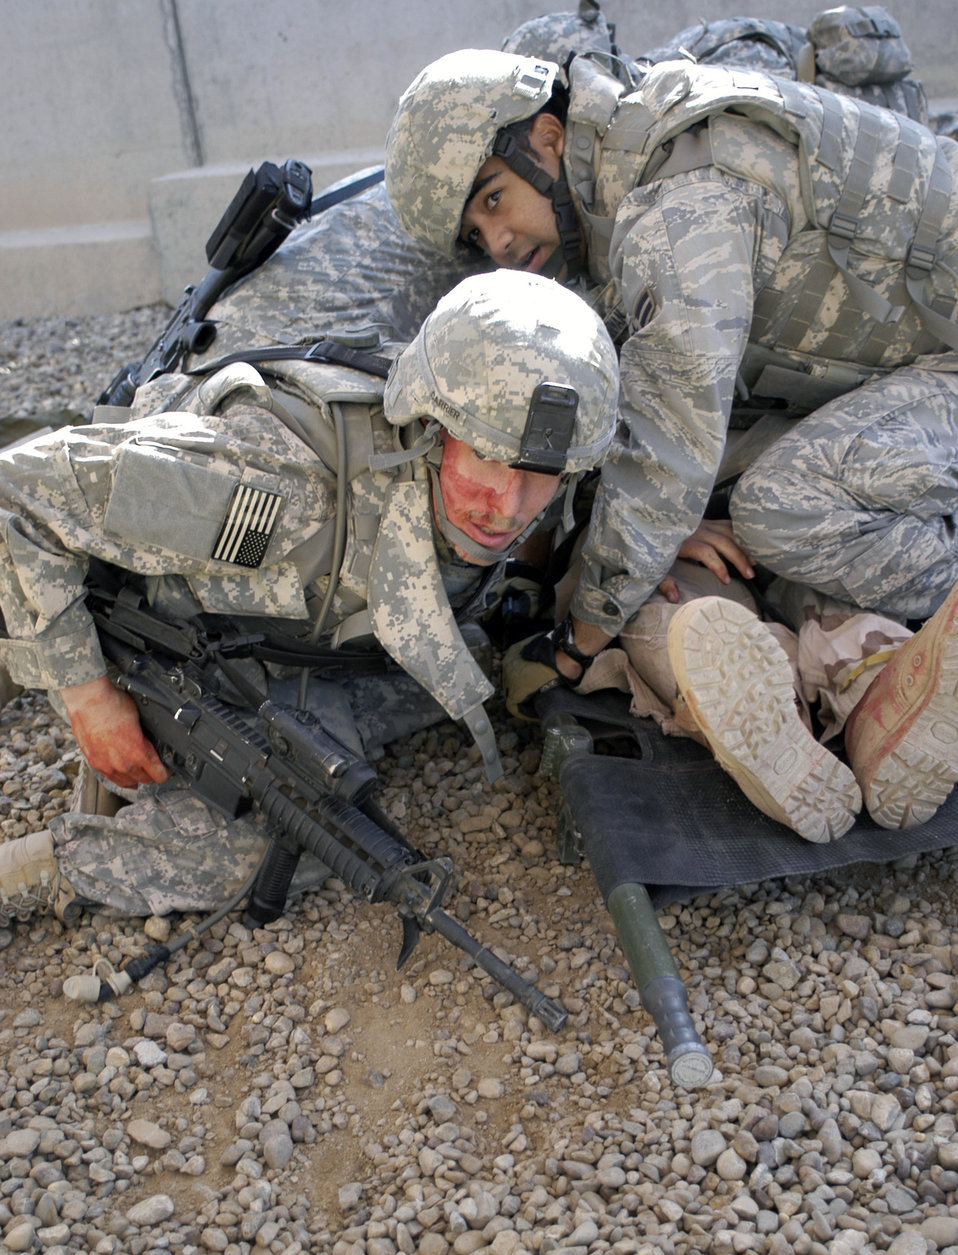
Airmen train to start warrior care on the battlefield

Airman 1st Class Jonathan Guzman covers a roleplayer who was simulated wounded to protect him from further injury during a counter attack during training Nov. 12 at Joint Base Balad, Iraq. Airman Guzman is a security forces apprentice deployed from Lackland Air Force Base, Texas, attended combat lifesaver training, which is a requirement for personnel in the 332nd Expeditionary Security Forces Group. He is assigned to the 532nd Expeditionary Security Forces Squadron.